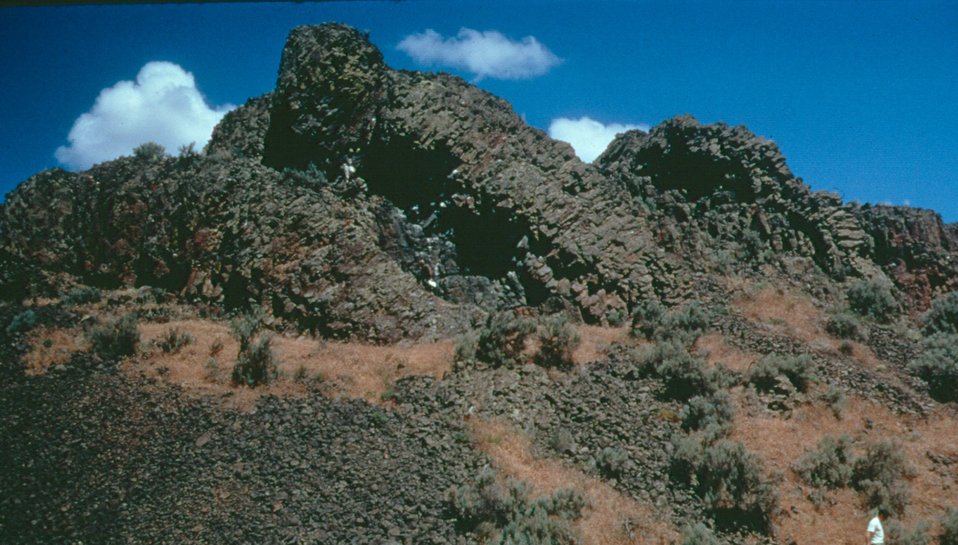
3-Ring dike in basalt Four Rivers LSRD Lower Snake River District